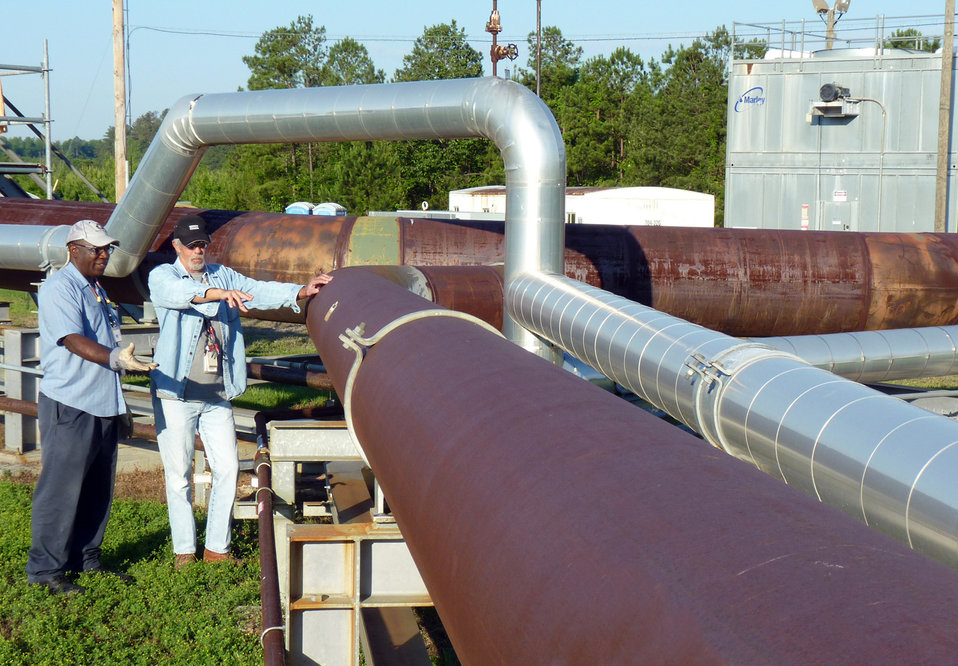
SRNS Uses Innovative Technology to “Steam Clean” at SRS

Savannah River Nuclear Solutions, LLC (SRNS) recently completed a multi-year project resulting in the removal of over 33,000 gallons of non-radioactive chemical solvents from beneath the Savannah River Site’s (SRS) M Area, preventing these pollutants from entering the local water table.

The DUS cleanup system is simple in concept: Drill strategically placed vertical, horizontal and angled penetrations through 10 million cubic feet of soil, located beneath the now remediated M Area pond and inject millions of pounds of steam.

This process increases the temperature of the solvents to the point where they vaporize. The solvent vapors (and some associated contaminated liquids) are then “vacuumed” out of the contaminated area through the use of 33 extraction wells and treated at the surface.